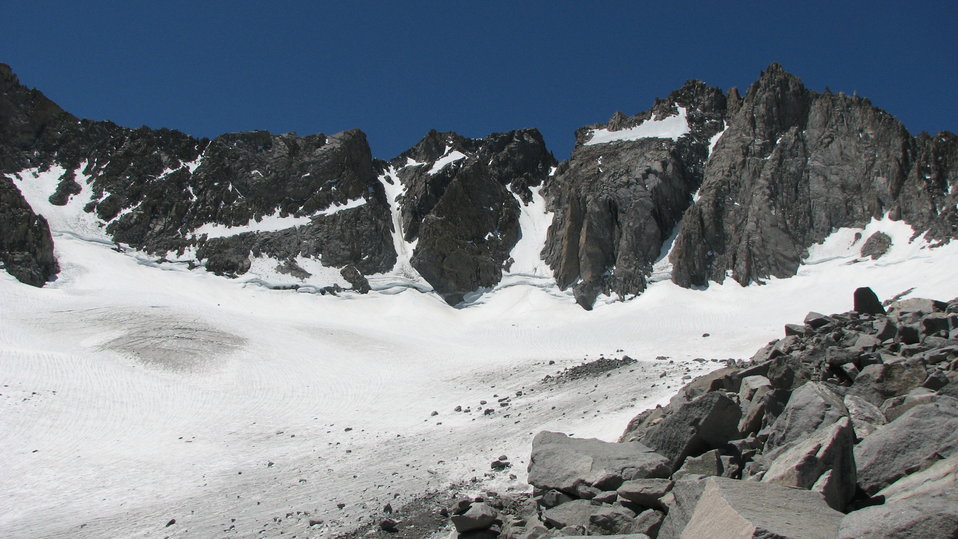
View of the Palisade Glacier below North Palisade, California, USA